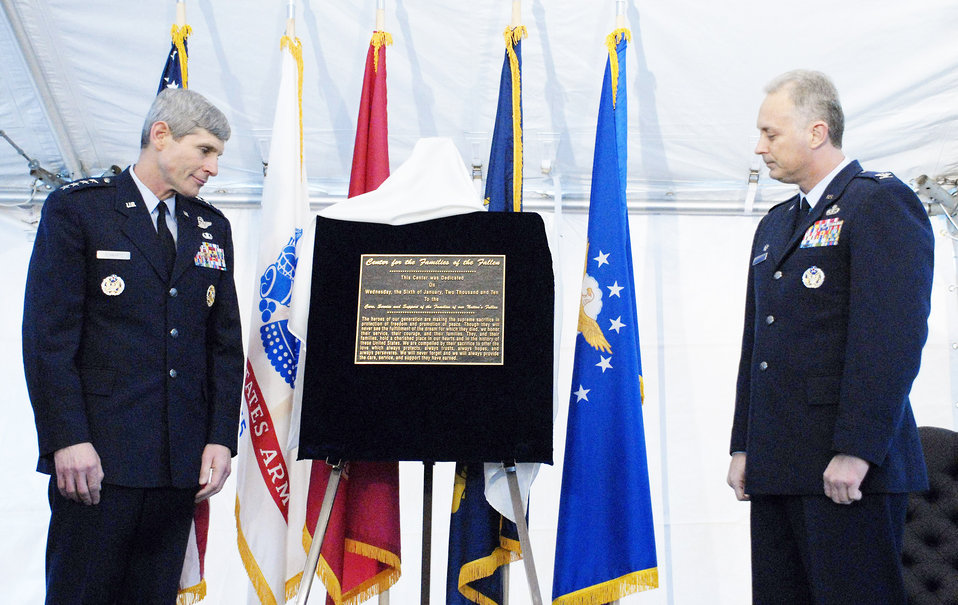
Chief of staff dedicates Center for Families of the Fallen

Air Force Chief of Staff Gen. Norton Schwartz and Lt. Col. Robert Edmondson read the inscription of the plaque unveiled during a dedication ceremony for the Center for Families of the Fallen Jan. 6, 2010, at Dover Air Force Base, Del. The 6,000 square foot facility, created by renovating a former base supply store, will provide a comfortable waiting and grieving area for families of fallen servicemembers who come to witness the dignified transfer of their remains. Colonel Edmonsdson is the commander Air Force Mortuary Affairs Operations Center.